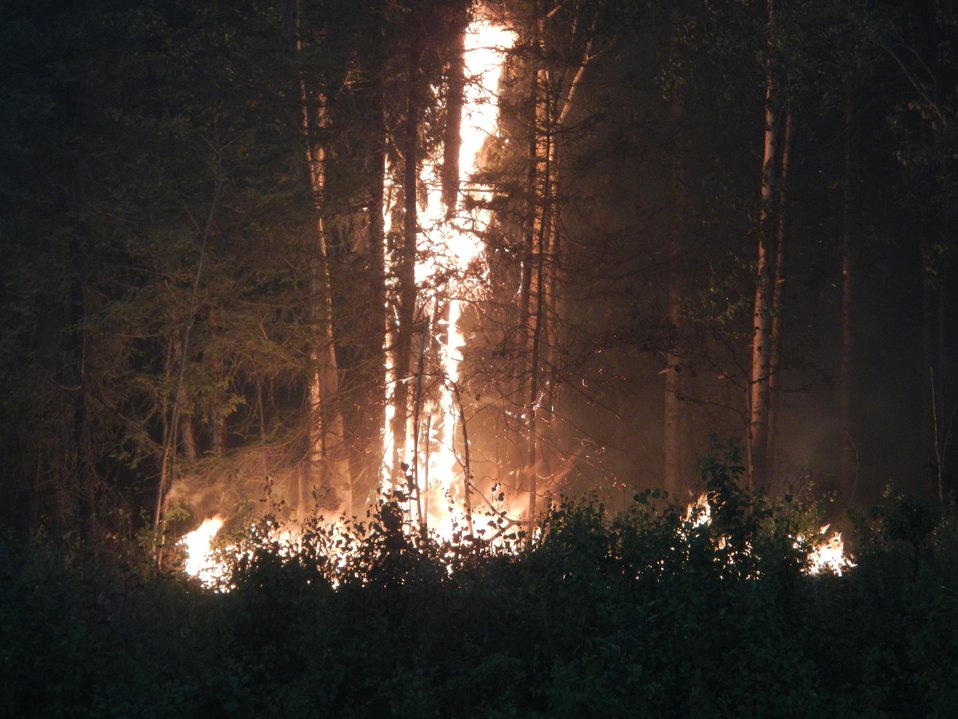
A singletree torching occurs during the Stewart Creek Fire. The Stewart Creek Fire located 25 miles east of North Pole, AK began on Jun. 19, 2013 due to human causes and has consumed an estimated 85, 475 acres. The fire is approximately 57% contained.